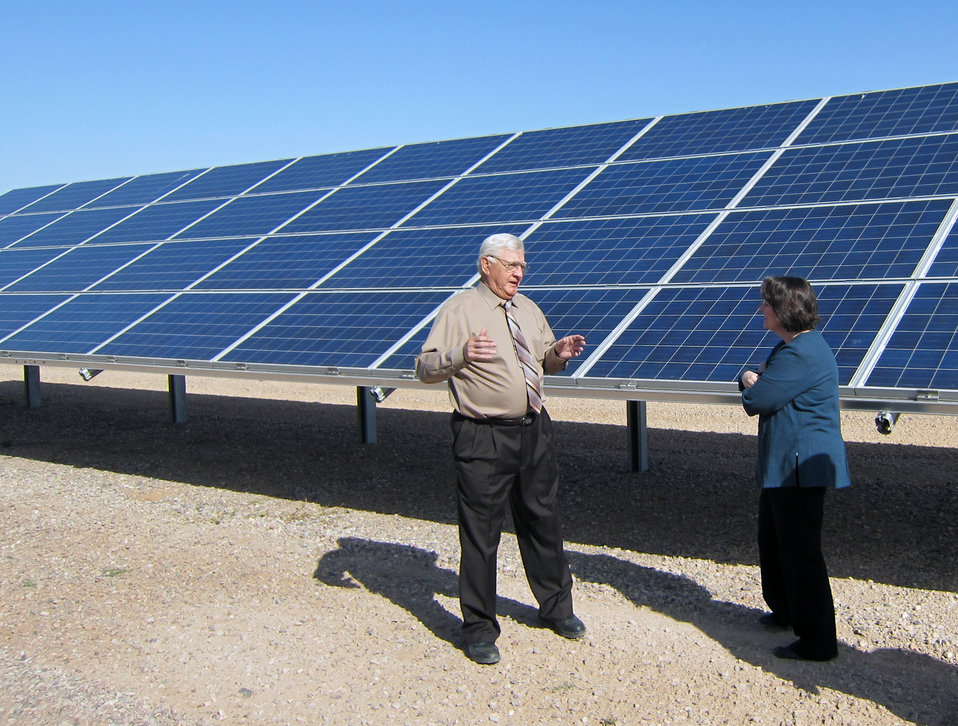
Agriculture Deputy Secretary Dr. Kathleen Merrigan with Victor Orlowski President of Professional Engineers for the Dairy Industry as he demonstrates new equipment on the Zimmerman Dairy in Queen Creek, Arizona, on Tuesday, March 27, 2012.